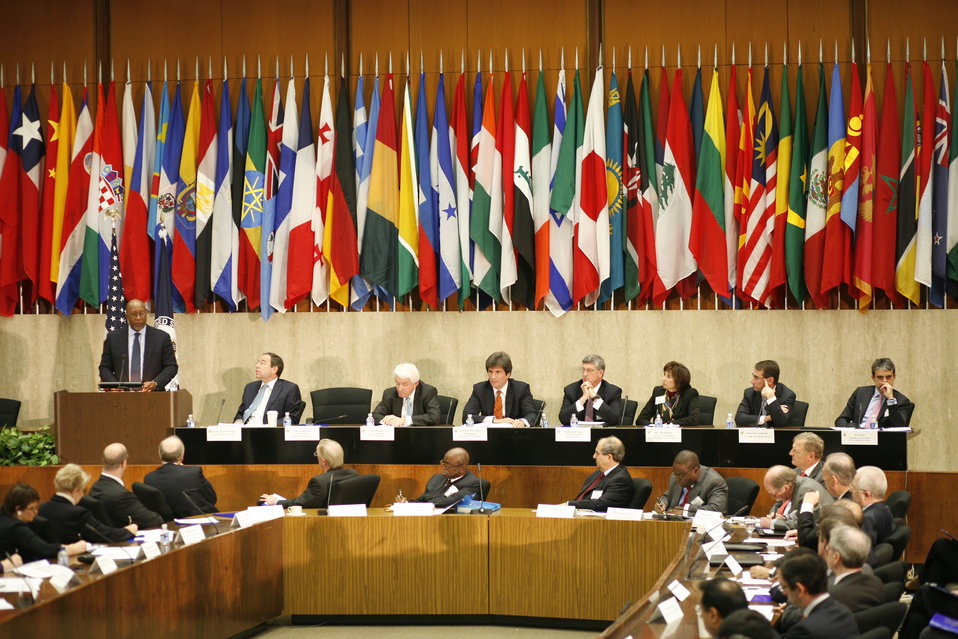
U.S. Trade Representative Kirk Delivers Remarks

U.S. Trade Representative Ron Kirk delivers remarks at the first-ever State Department Global Business Conference at the U.S. Department of State in Washington, D.C., on February 21, 2012. State Department photo by Ben Chang/ Public Domain]